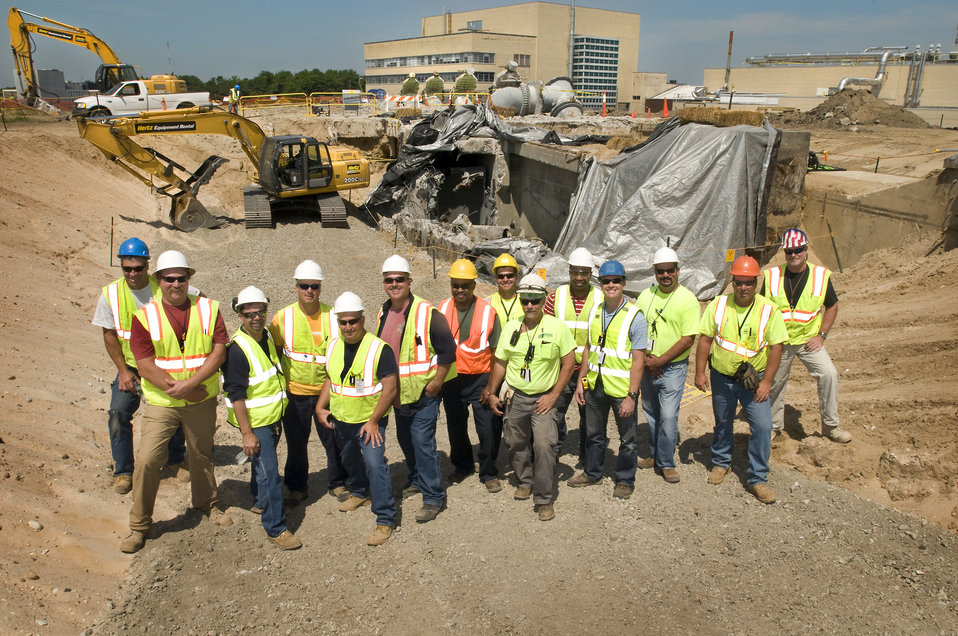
BGRR Demolition Crew

Brookhaven Graphite Research Reactor demolition crew.